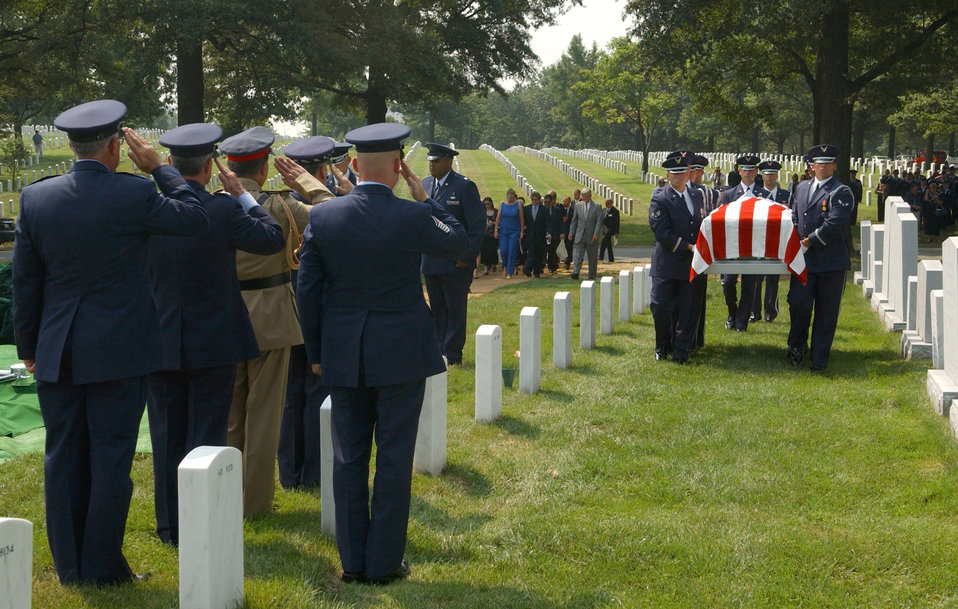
Group Burial

ARLINGTON NATIONAL CEMETERY, Va. -- Honor guard Airmen carry the remains of four U.S. Airmen and an Iraqi Airman who died May 30 in an aircraft accident in Iraq.